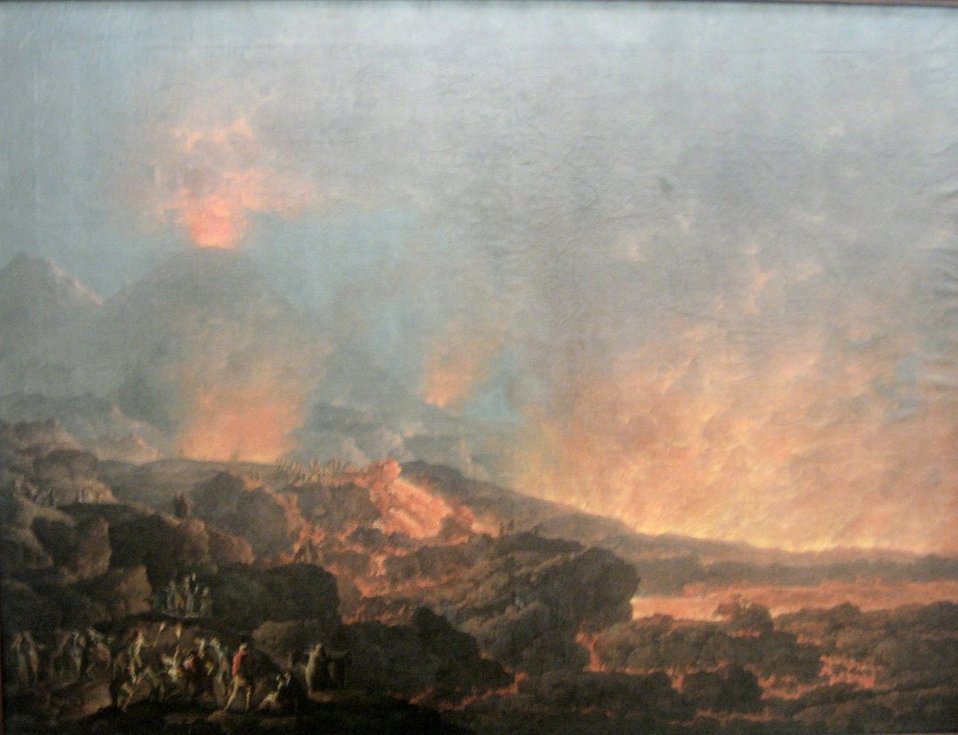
'Eruption of the Vesuvius', oil on canvas painting by Carlo Bonavia, 1758, Museu de Évora, Portugal